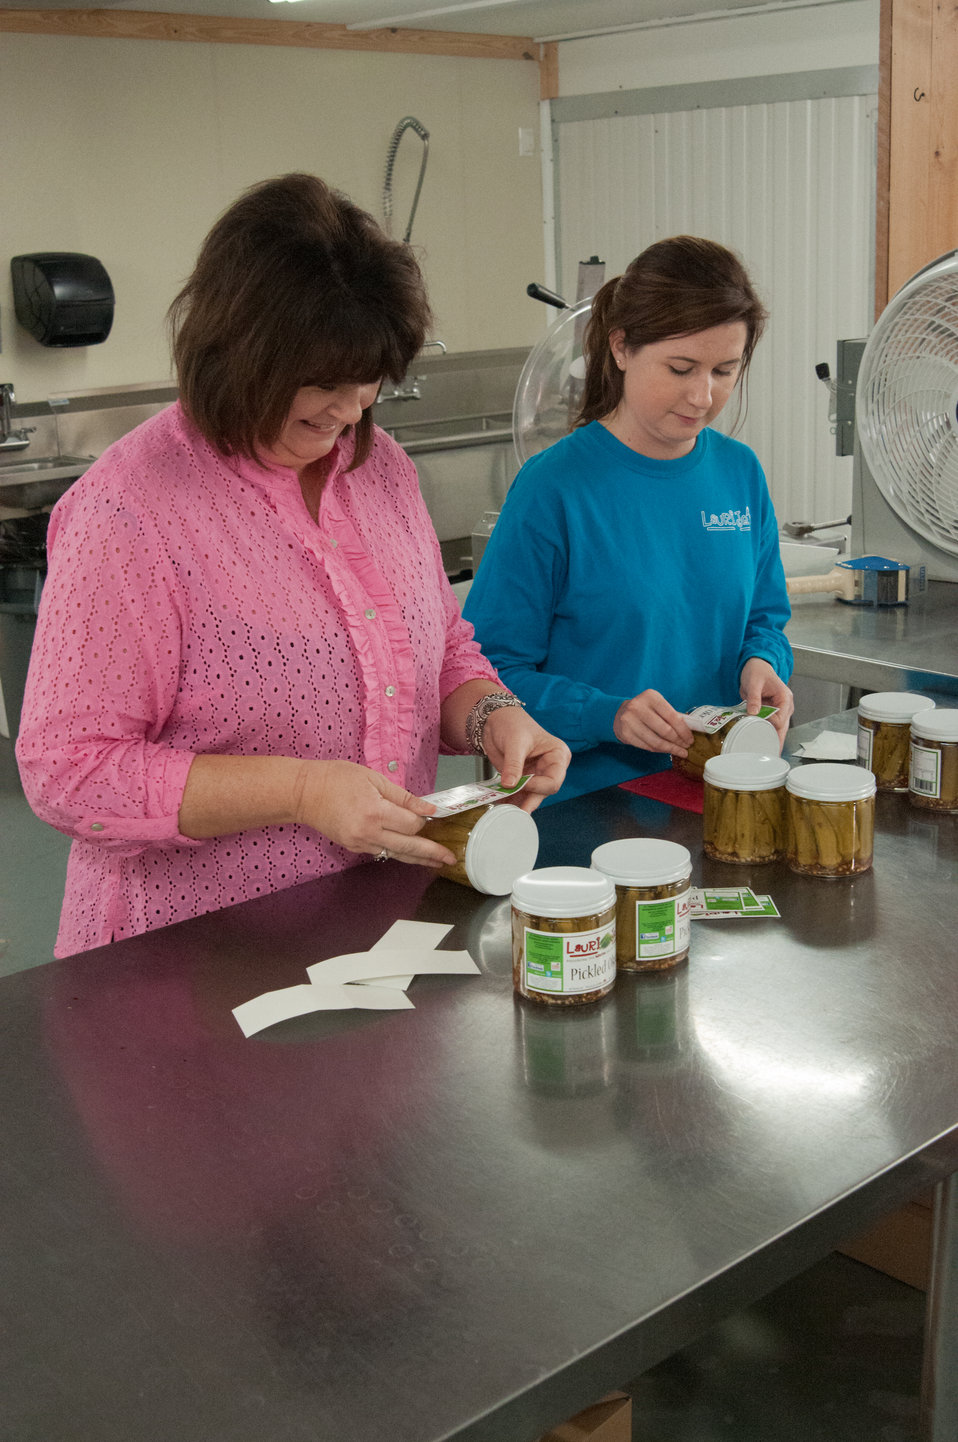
Laurie Jo’s Southern Style Canning business owner Laurie Jo Bennett and daughter Mikelyn Bennett apply labels to pickled okra packaged at her mother’s business in Norman Park, Colquitt County, GA on Mar. 7, 2013. Bennett was able to secure a U.S. Department of Agriculture (USDA) Rural Development (RD) Rural Business Enterprise Grant (RBEG) to help market her products. Bennett has increased her business’s production to 12 items that now includes pickled green tomatoes, pickled okra, pickled asparagus pickled green beans, red and green pepper jellies, pineapple pepper jelly salsa and pepper sauce. Consumers may now purchase Lauri Jo’s Southern Style Canning Line in Whole Foods, Earth Fare and Kroger stores across 20 states. The grant from USDA has enable Lauri Jo to employ 26 people. The USDA Strike Force Initiative has designated Colquitt County, GA as a Strike Force county selected to receive assistance to relieve persistent poverty in historically high-poverty counties.